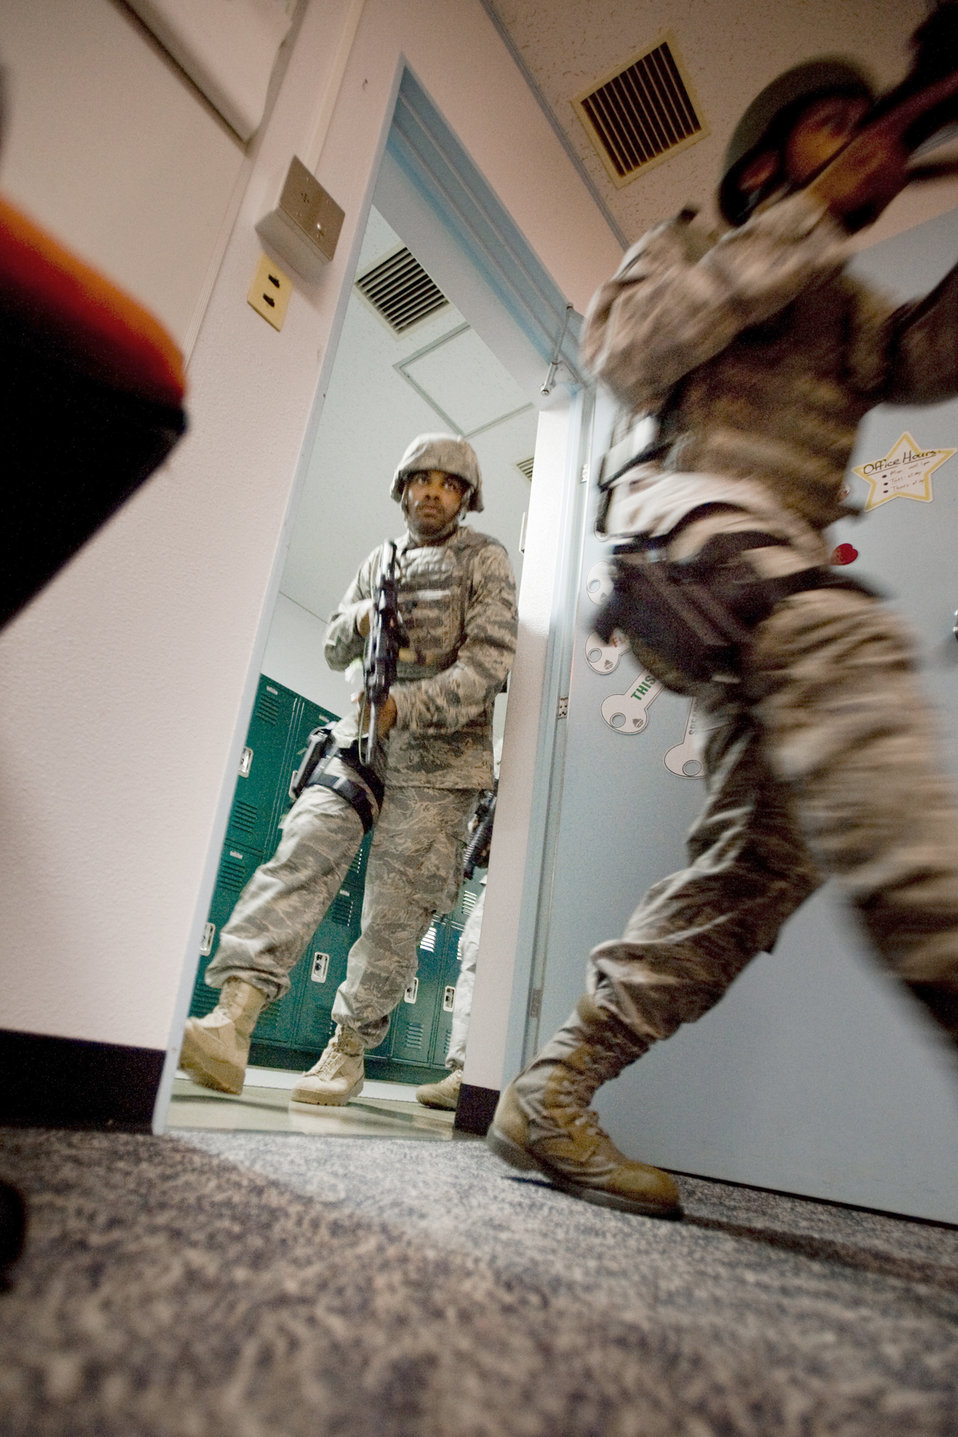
Security forces Airmen, Sailors learn new active shooter techniques

Airman 1st Class Steven Howard Jr., left, and Senior Airman Rolland Gould make their way into a classroom July 22, 2010, during high-risk response training at Misawa Air Base, Japan. The five-day course gave security forces Airmen interactive academics in class and newly developed, hands on techniques grounded in contemporary special weapons and tactics training. Airmen Howard and Gould are assigned to the 35th SFS at Misawa Air Base, Japan.